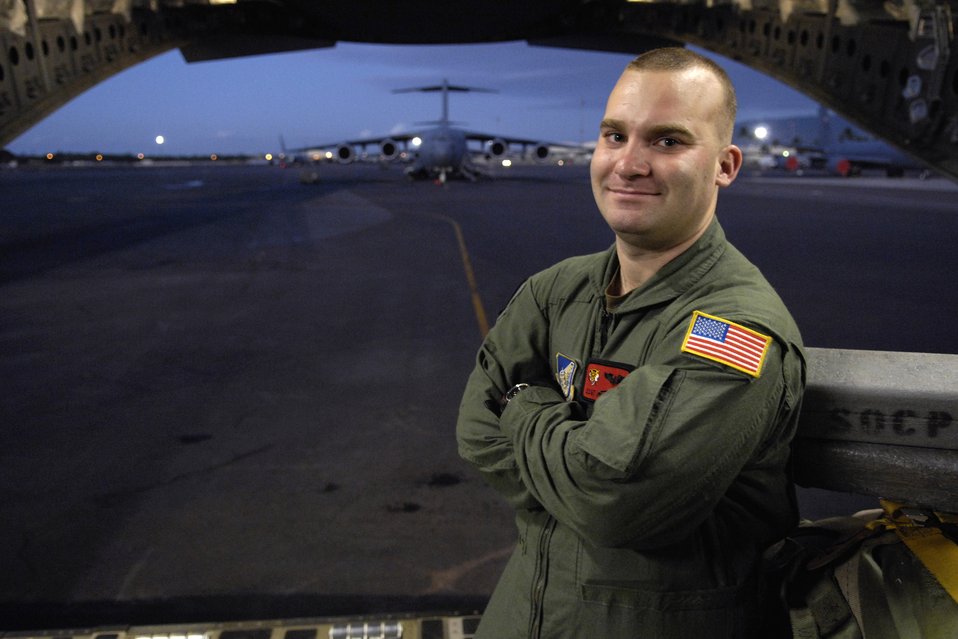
C-17 delivers strategic capability

Staff Sgt. Jason Scaffidi is a C-17 Globemaster III loadmaster with the 535th Airlift Squadron. The aircraft can perform tactical airlift and airdrop missions and can also transport litters and ambulatory patients during aeromedical evacuations when required.